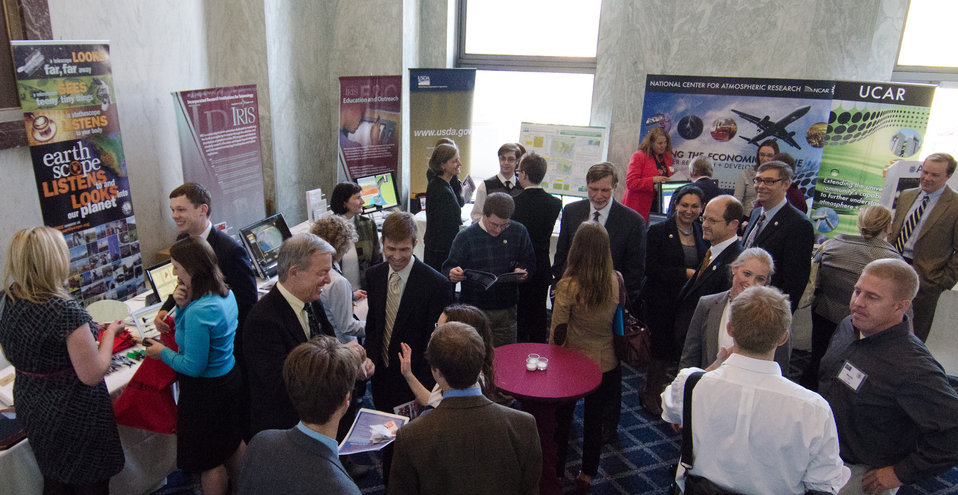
Representatives from the Research, Education, and Economics (REE) mission area U. S. Department of Agriculture were present for Congressional Visits Day at the Rayburn House Office Building in Washington, DC, on Wednesday, April 6, 2011. The event allows U.S. representatives, staff and Capitol Hill visitors the opportunity to learn about the REE's mission and the impact on America. REE's leadership responsibility is to advance scientific knowledge related to agriculture through research, extension, and education.